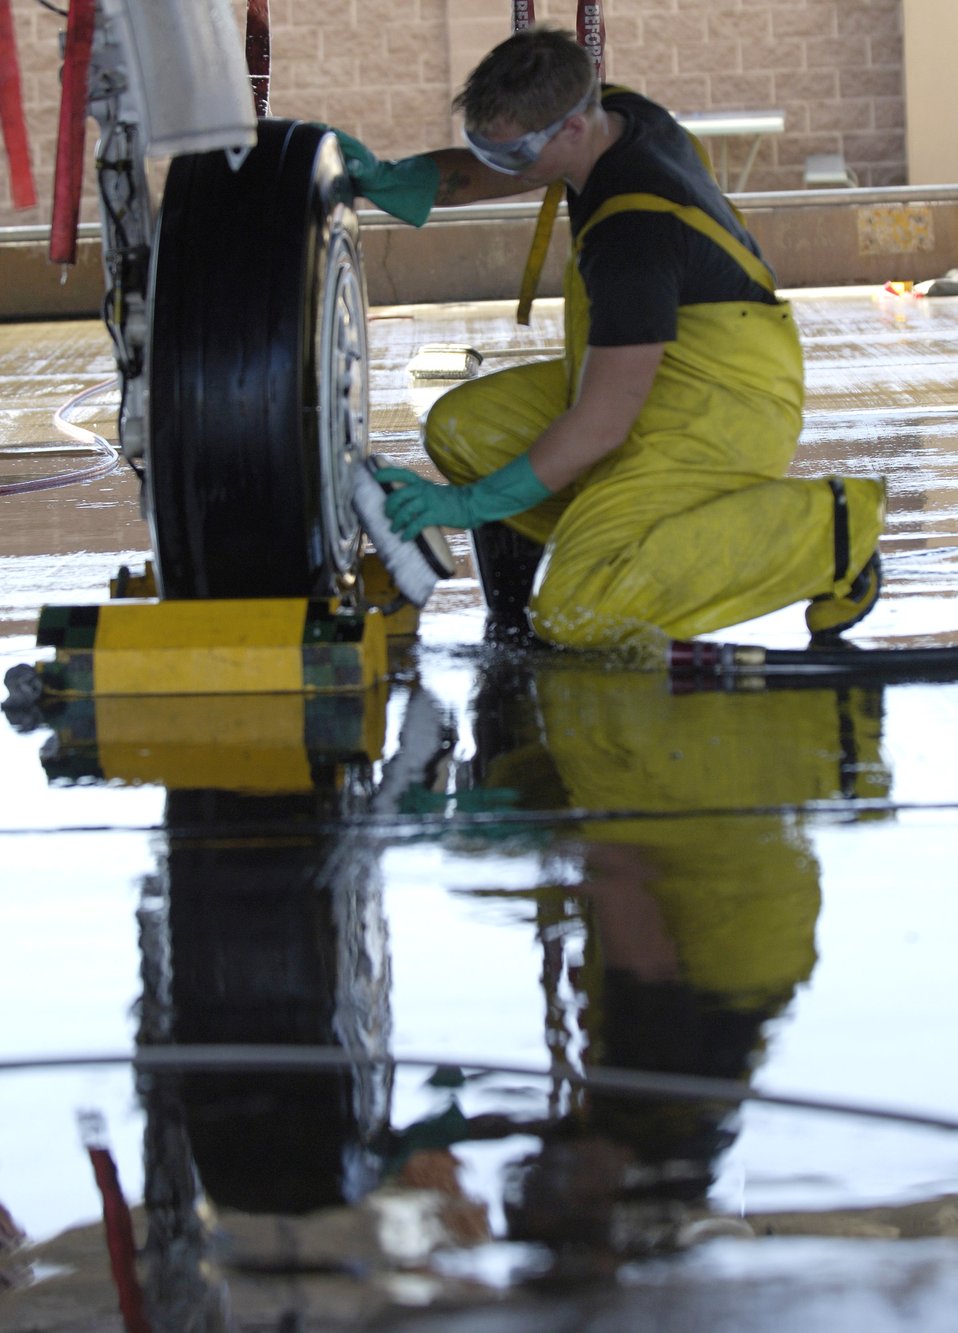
A Strike Eagle gets a bath

Airman 1st Class Dylan Edson scrubs the wheel of an F-15E Strike Eagle during a 120-day periodic cleaning March 15 at Nellis Air Force Base, Nev. The complete F-15 cleaning process takes approximately four hours with a crew of three. Airman Edson is an avionics specialist assigned to the 57th Aircraft Maintenance Squadron at Nellis.